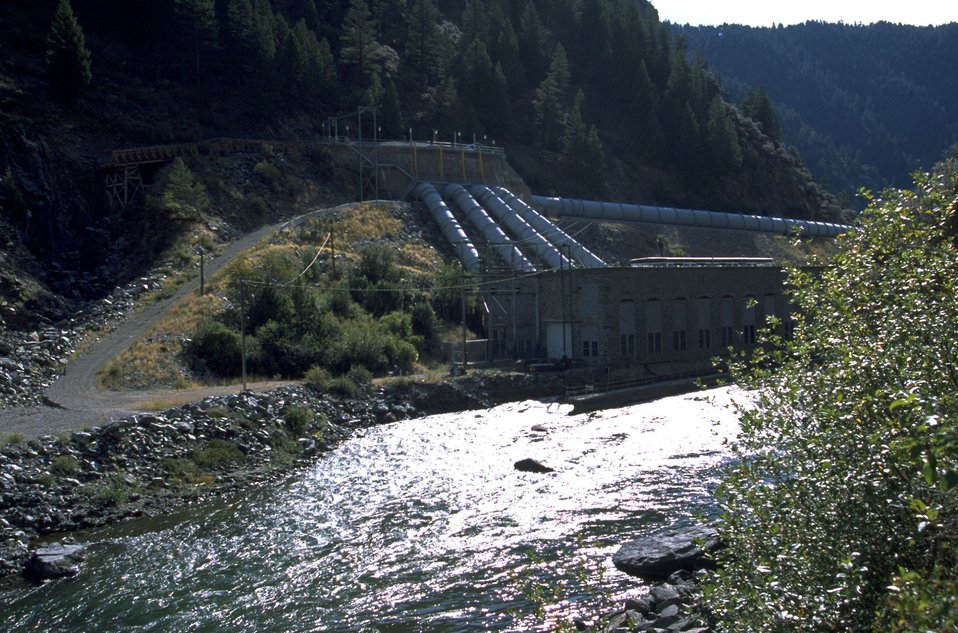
Power Plant and flow tube on Madison River